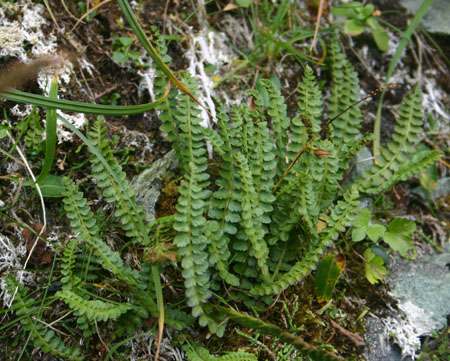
asf

Aleutian Shield Fern